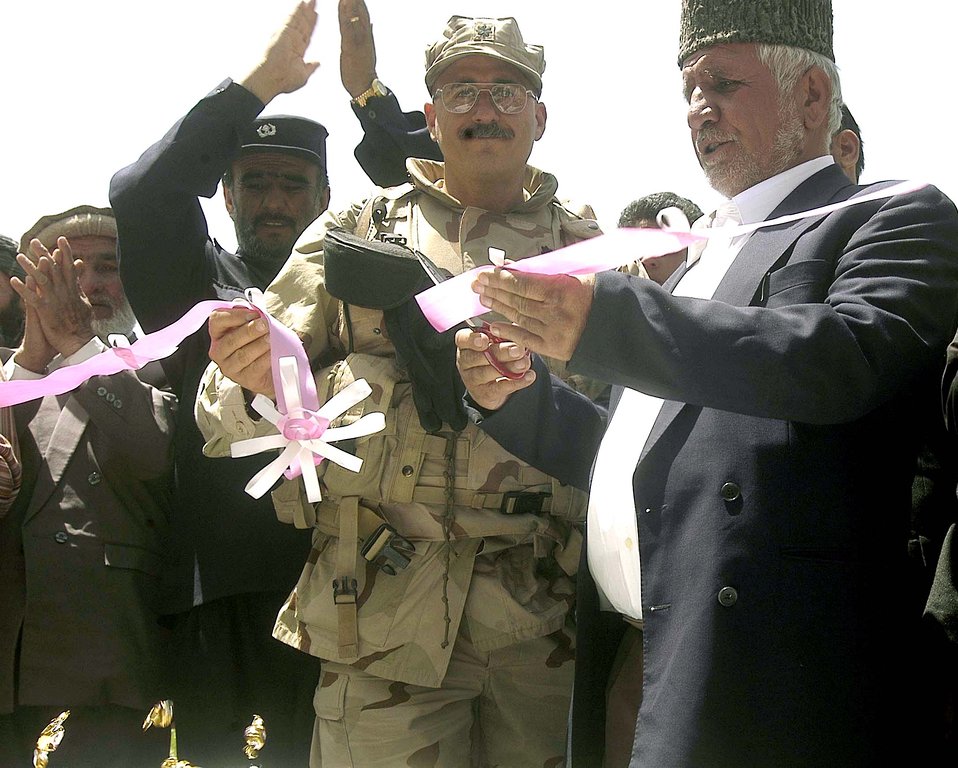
U.S., Parwan governments build 'bridge to future'

Parwan Deputy Governor Gulam Sedeeq Sedeeq (right) cuts the ribbon on a newly built bridge while Air Force Lt. Col. Donald Koehler holds the ribbon in place. The new span links 600 to 700 families in the mountains of Afghanistan to transportation and the rest of their country. Colonel Koehler is the commander of the Bagram Provincial Reconstruction Team.